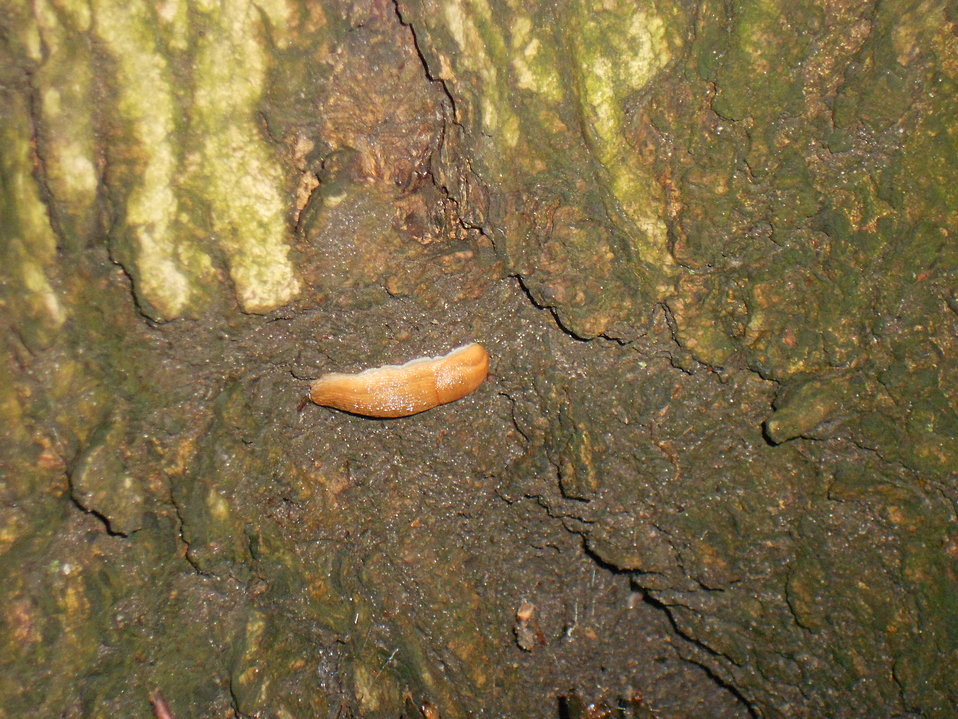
Slug

Credit: USFWS

'I took the picture for [the scavenger hunt] for the 'something living on something'. And slugs are cool.' -Jason Francis